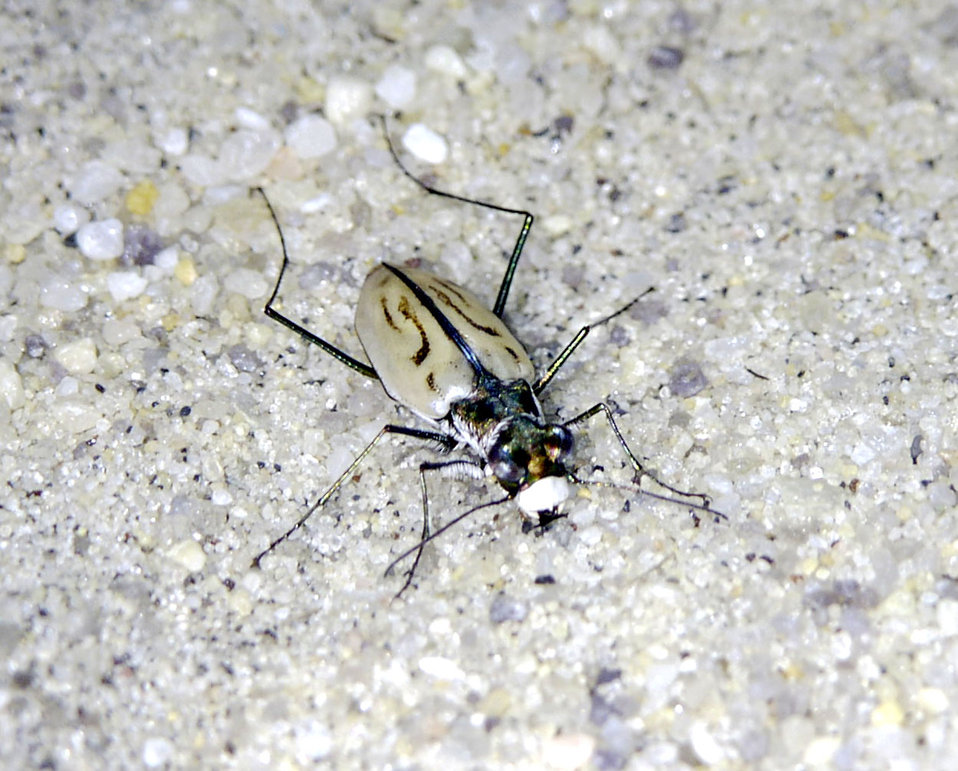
Northeastern beach tiger beetle

The Service listed the beetle as threatened in 1990 and in 2009, recommended reclassifying it as endangered due to loss of habitat and associated decline of its populations.

The Service has been developing an adaptation strategy for the effects of sea-level rise on the beetle. The strategy will include a combination of maintaining and stabilizing some areas of beach habitat while allowing others to naturally change. This approach, if implemented successfully, should maintain sufficient habitat and beetle populations to allow adaptation to changing conditions.